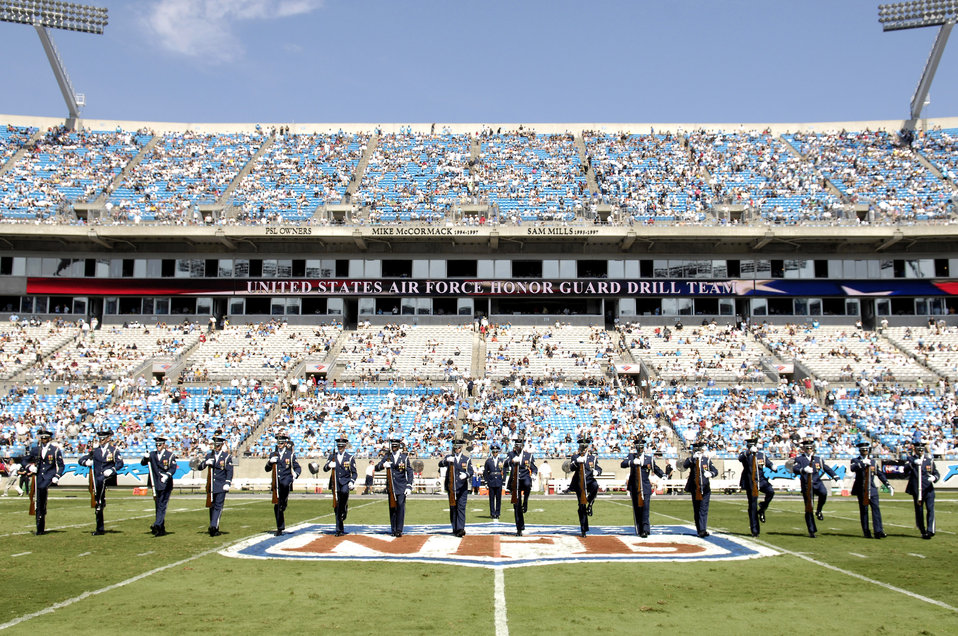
Drill team celebrates Air Force anniversary

Members of the Air Force Honor Guard Drill Team perform during halftime Sept. 16 at the NFL's Carolina Panthers vs. Houston Texans football game in North Carolina. The performance was part of the team's